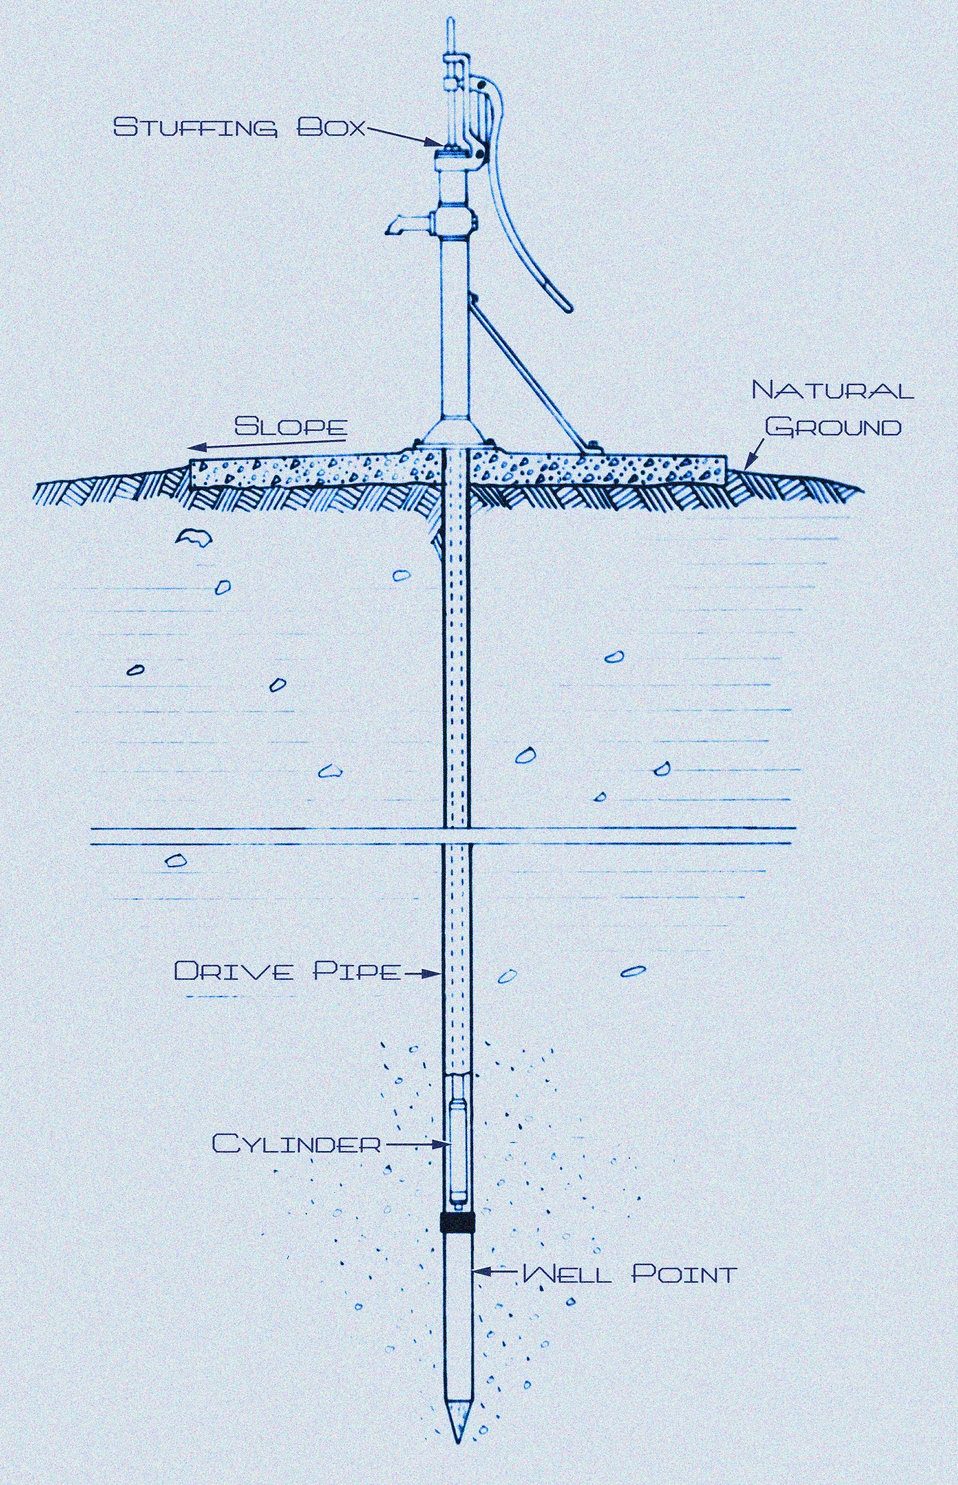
This historic diagram, which had been digitally enhanced and colorized, depicted a properly constructed 'driven' well with its cylinder suspended inside the lumen of the centrally driven pipe. Published in 1933, this was one of a series of instructional drawings used by the Minnesota Board of Health to train the state's public health workers. Note the slope of the concrete slab was away from the well, in order to prevent well contamination with water overflow, and drippings.